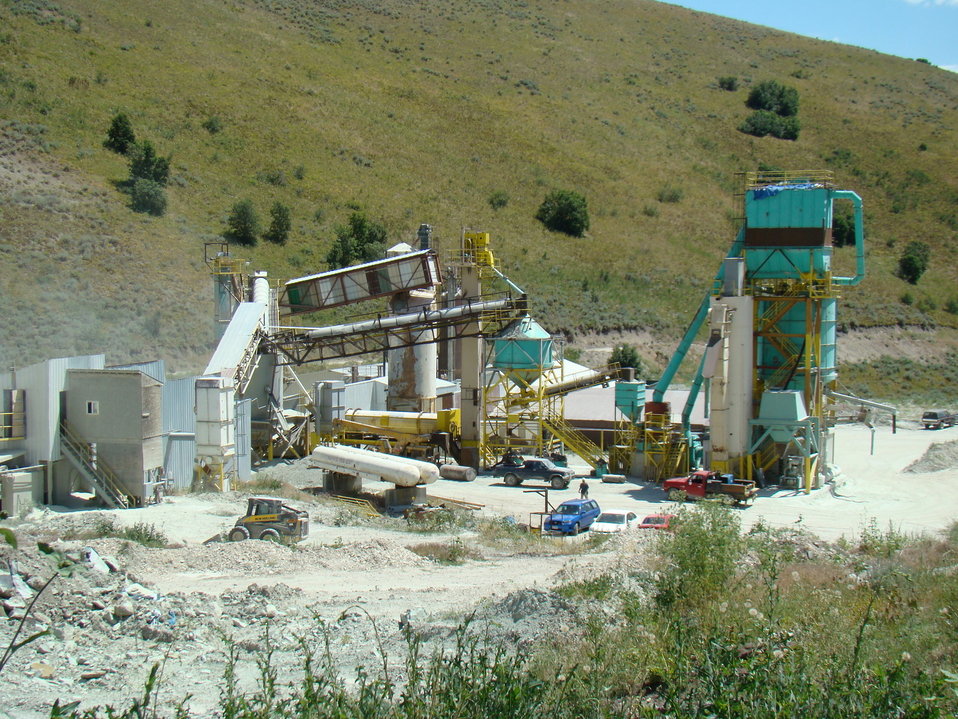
Recovery Act Funds Construction of Trench to Mitigate Groundwater Contamination